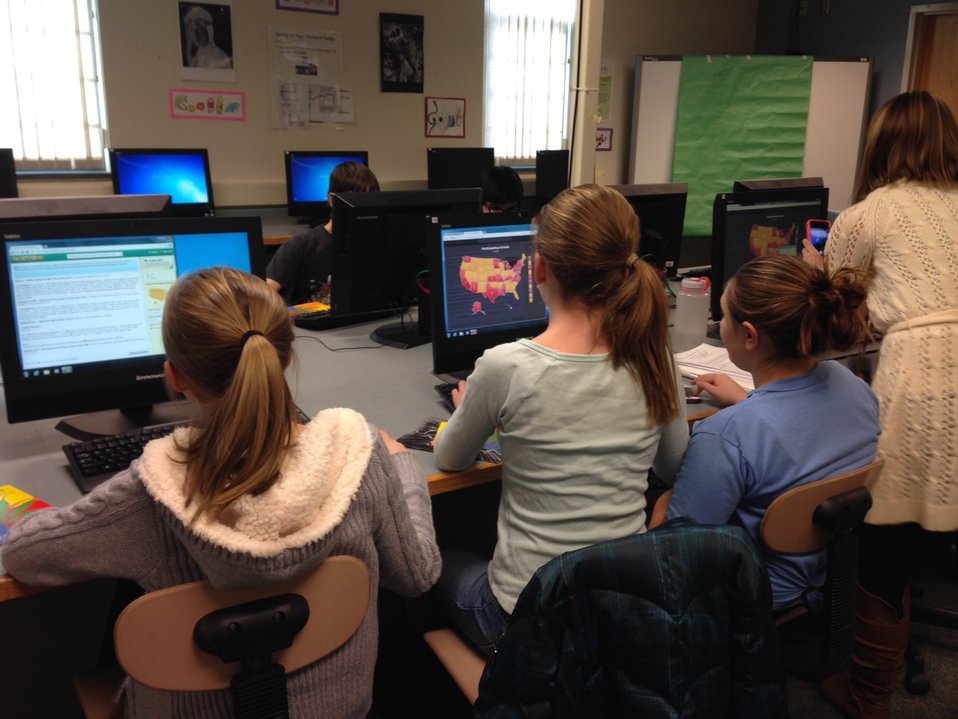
Chat Day at Strong Middle School in Durham, Connecticut